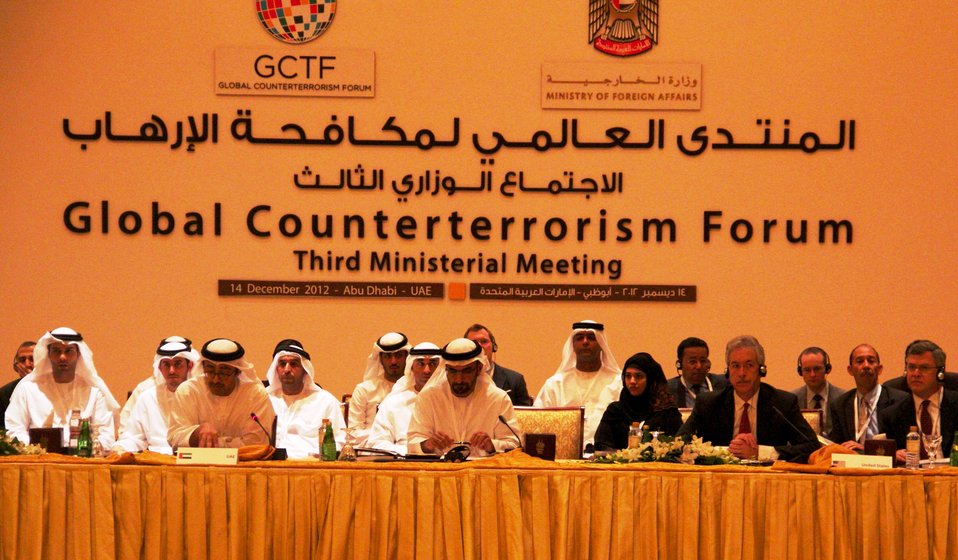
Deputy Secretary Burns Participates in the Global Counterterrorism Forum

Deputy Secretary of State William Burns participates in the 3rd ministerial meeting of the Global Counterterrorism Forum (GCTF) in Abu Dhabi, United Arab Emirates, December 14, 2012.